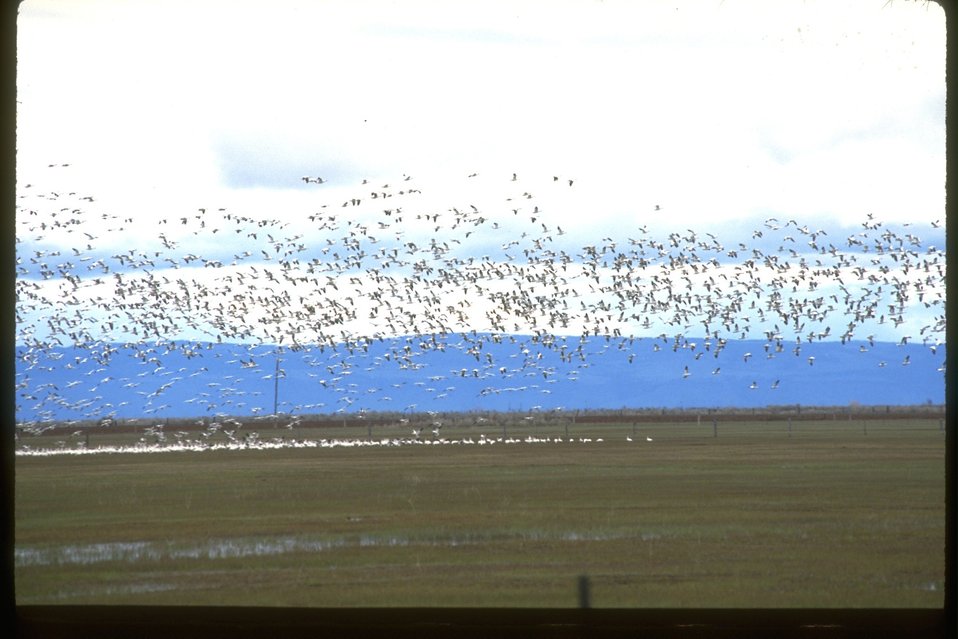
Snow Geese (Chen hyperborea) south of Burns.